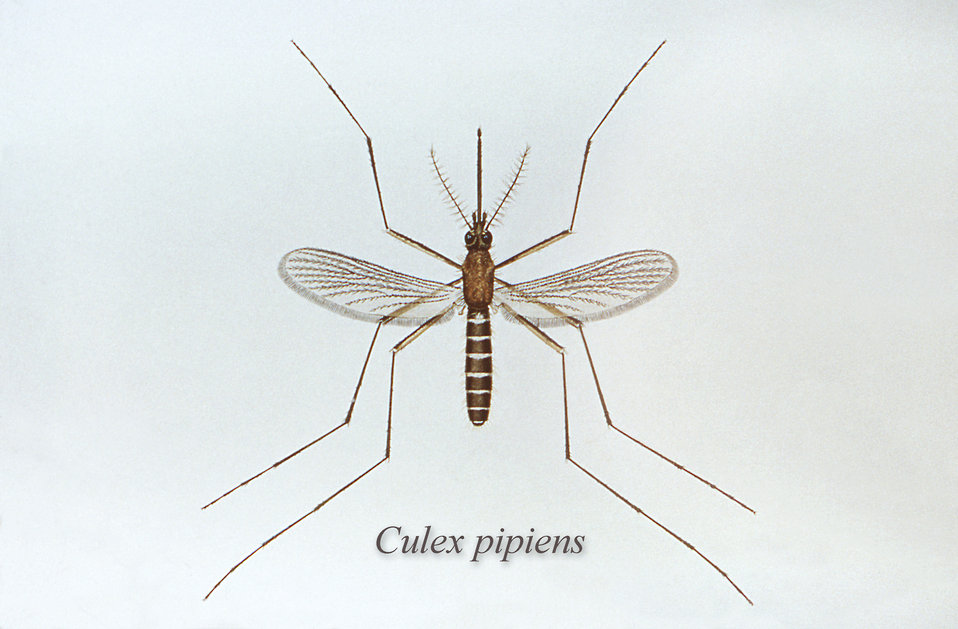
This illustration depicts a dorsal view of a Culex pipiens mosquito.